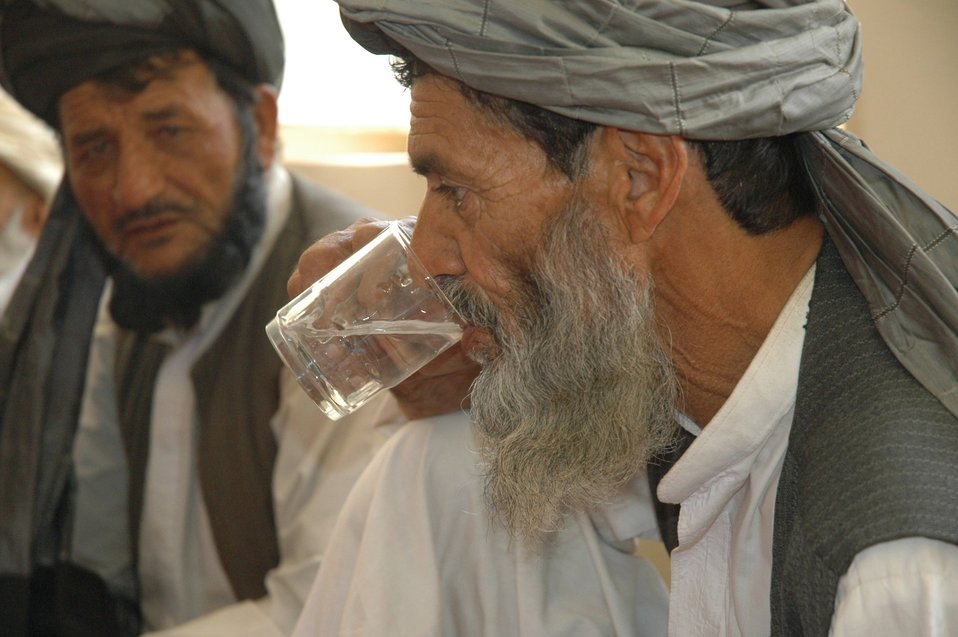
Servicemembers introduce water sanitation to Afghan village

A Shajoy village elder sips purified water after Zabul Provincial Reconstruction Team medics introduced a new water sanitation process July 31 in the Shajoy District of Afghanistan. The team chose Shajoy to test run the process, which (after initial costs) creates clean drinking water for 300 families or approximately 5,000 people at just $5 per month.